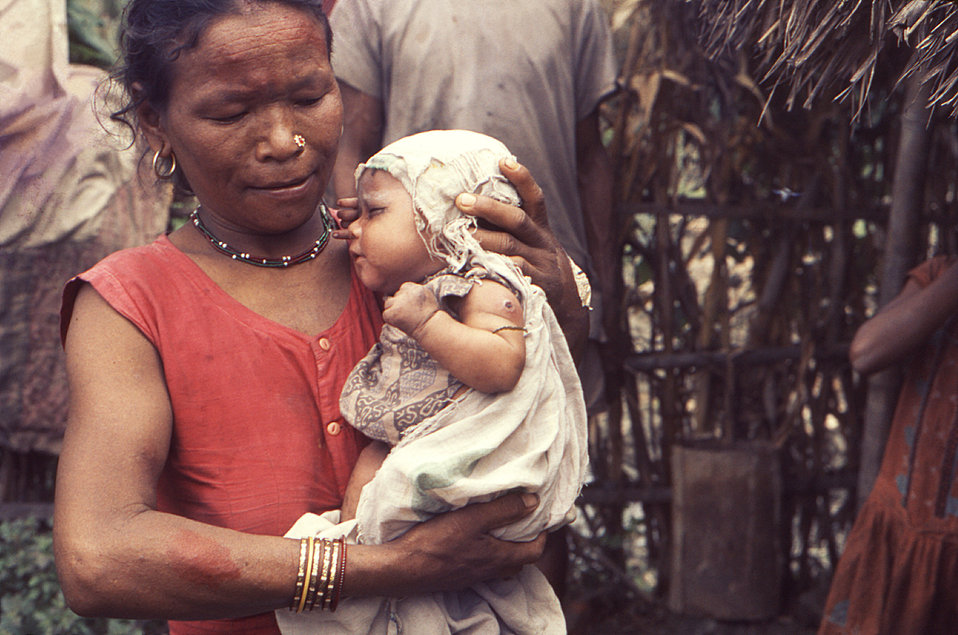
This December, 1974 photograph showed an adult female holding a very young infant who'd recently received a primary smallpox vaccination. The two were inhabitants of the city of Biratnagar, Nepal, which at the time of this photograph, had sustained a smallpox outbreak (See PHIL 10651).The Smallpox Vaccine